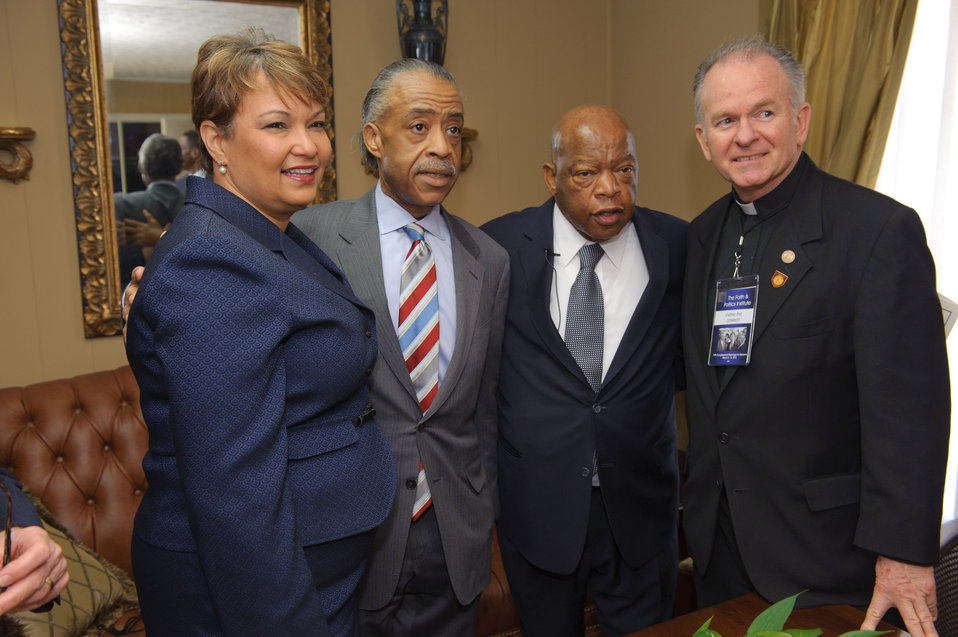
Administrator Jackson comes together with the Rev. Al Sharpton, Honorable Congressman John Lewis, and US House Chaplain Pat Conray